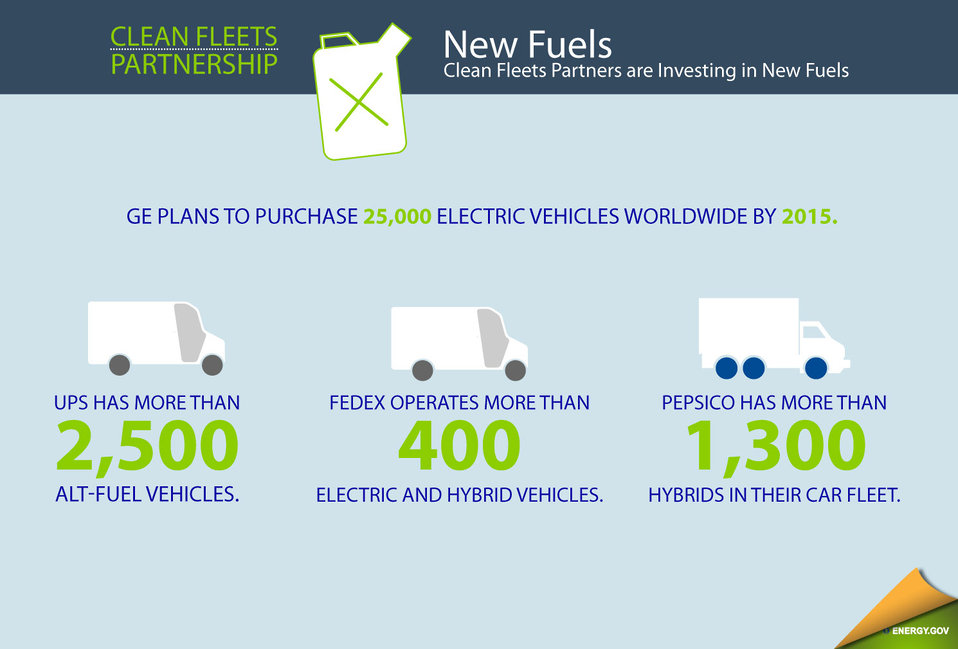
Investing in New Fuels